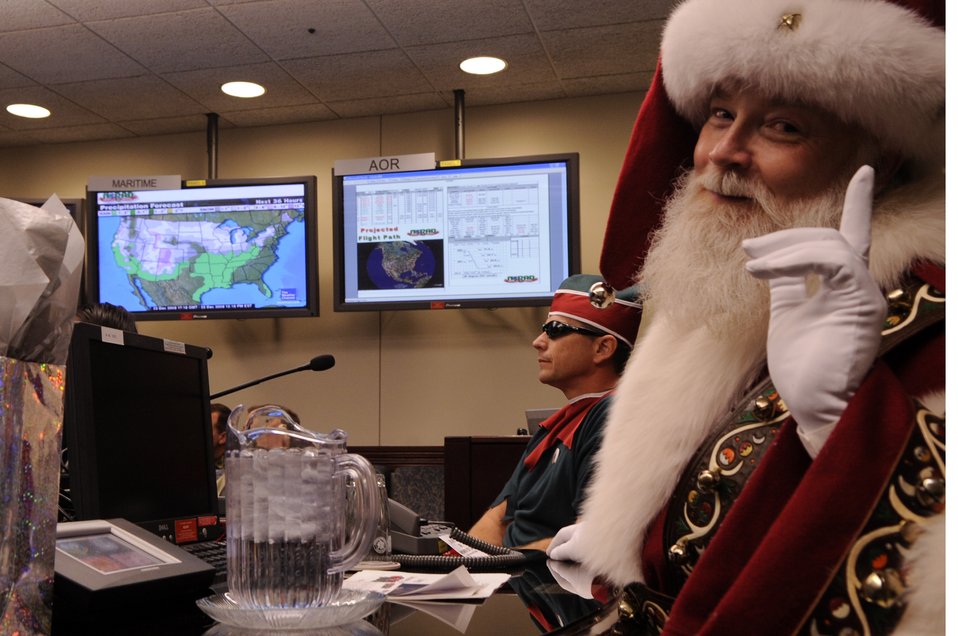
Santa Claus is coming to town

Santa Claus makes a surprise visit to the North American Aerospace Defense Command Tracks Santa Battle Cab Dec. 23 at Peterson Air Force Base, Colo. Santa received Federal Aviation Administration, weather and air mission brief.